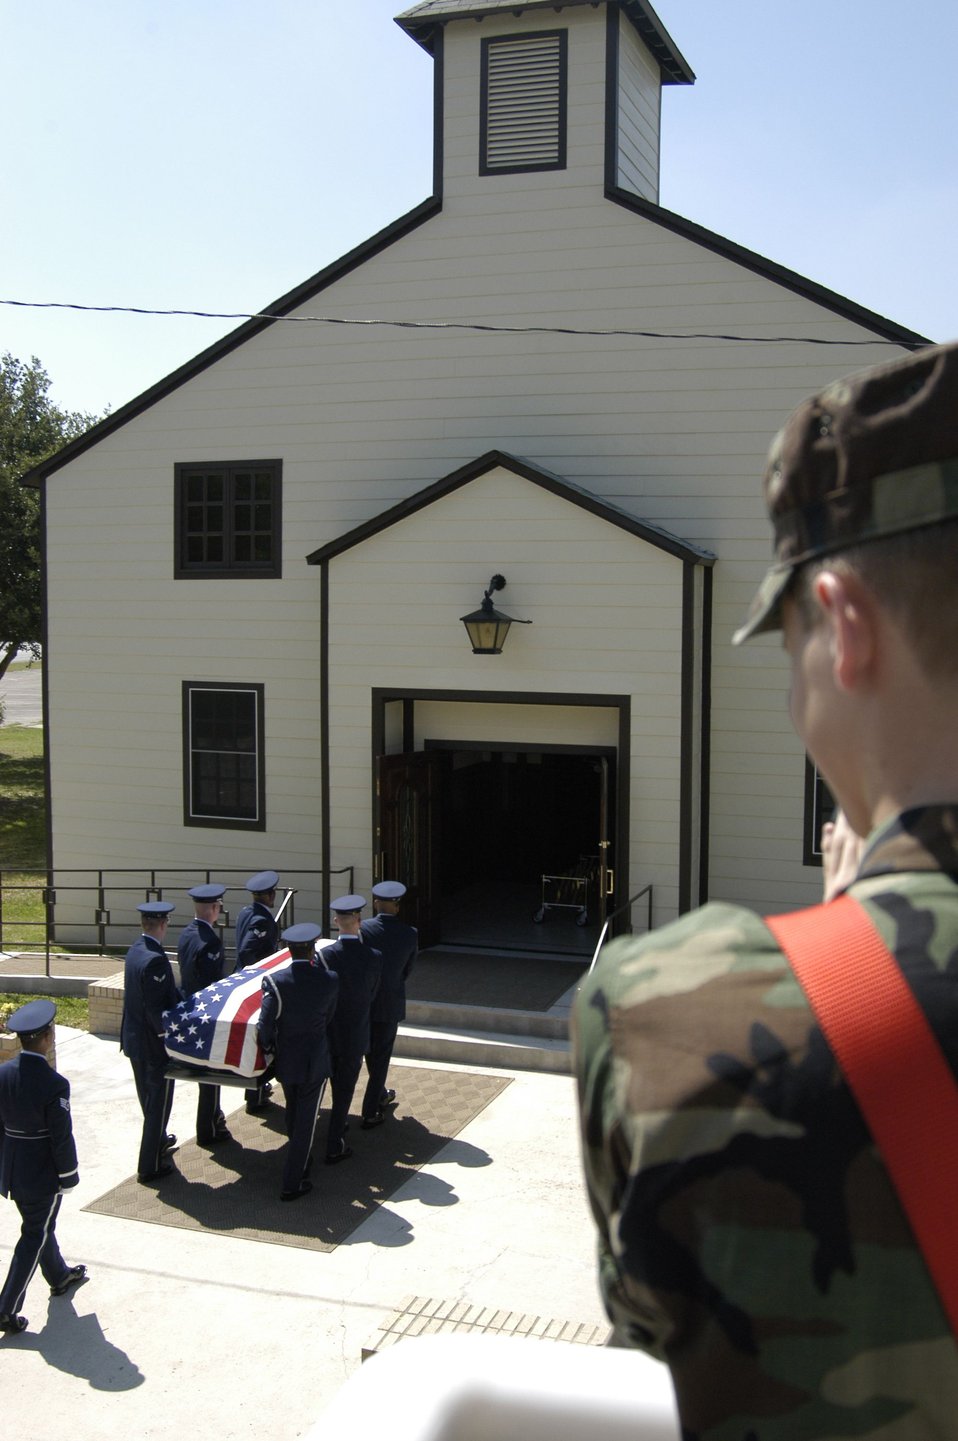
Video highlights honor guard mission

LACKLAND AIR FORCE BASE, Texas -- Airman 1st Class Shawn Rose (right) shoots video of honor guard pallbearers from a bucket truck. The Airmen are taking the casket into a chapel here. Airmen of the 37th Communications Squadron are producing a three-to-five minute honor guard mission video to help recruit new honor guard members.